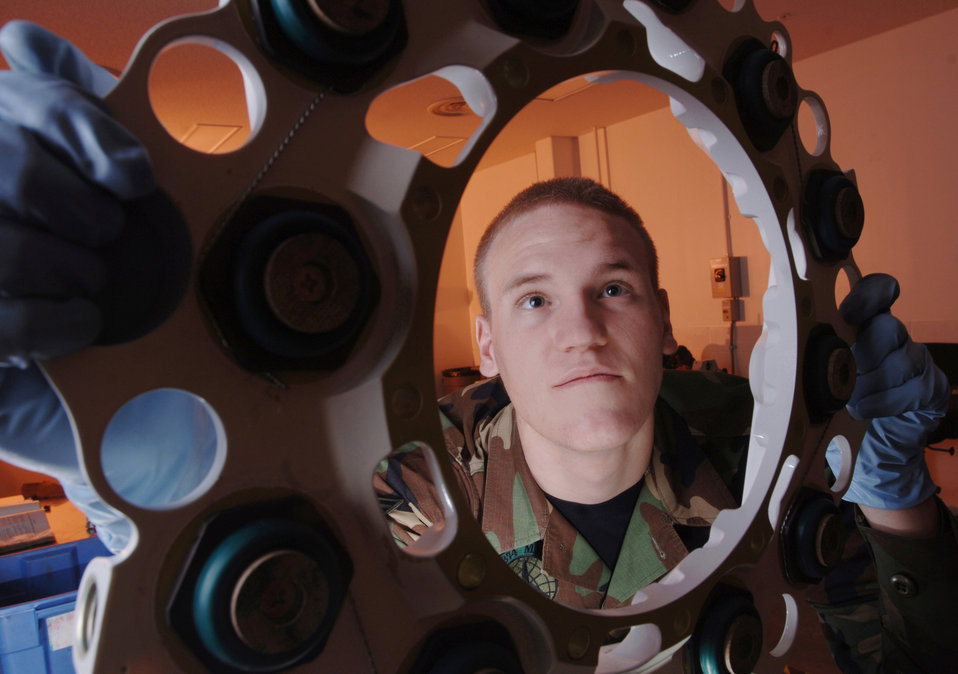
Gimme a brake

YOKOTA AIR BASE, Japan -- Airman 1st Class Daniel Arrington checks a C-130 Hercules brake assembly carrier at his facility here. The pneudraulics element troop with the 374th Maintenance Squadron, the Airman overhauls, modifies and tests all pneudraulics components on the C-130s assigned here and those that land here in transit.